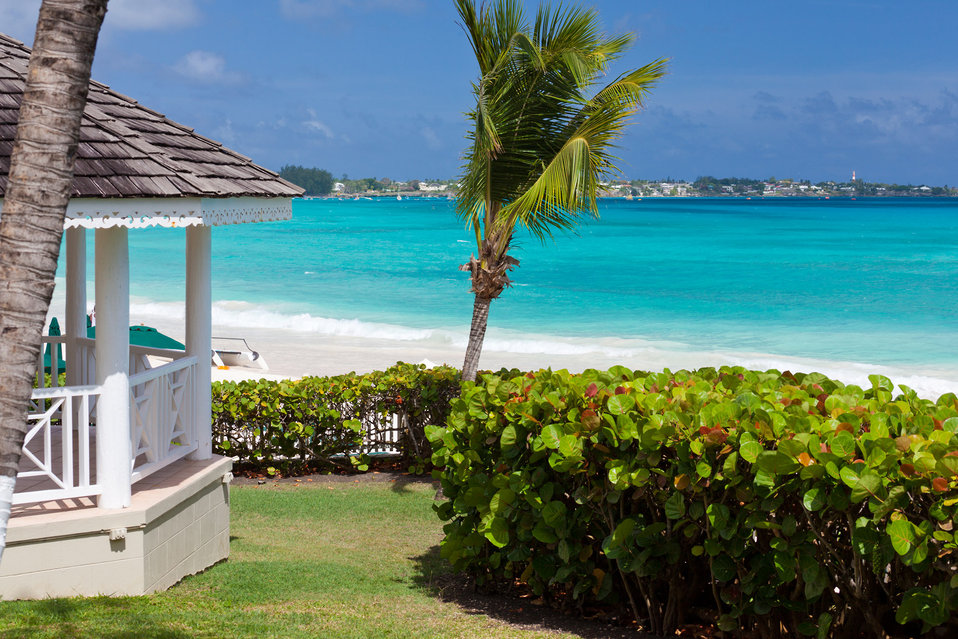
Tropical sea view

View at sea, beach, palm tree and gazebo.